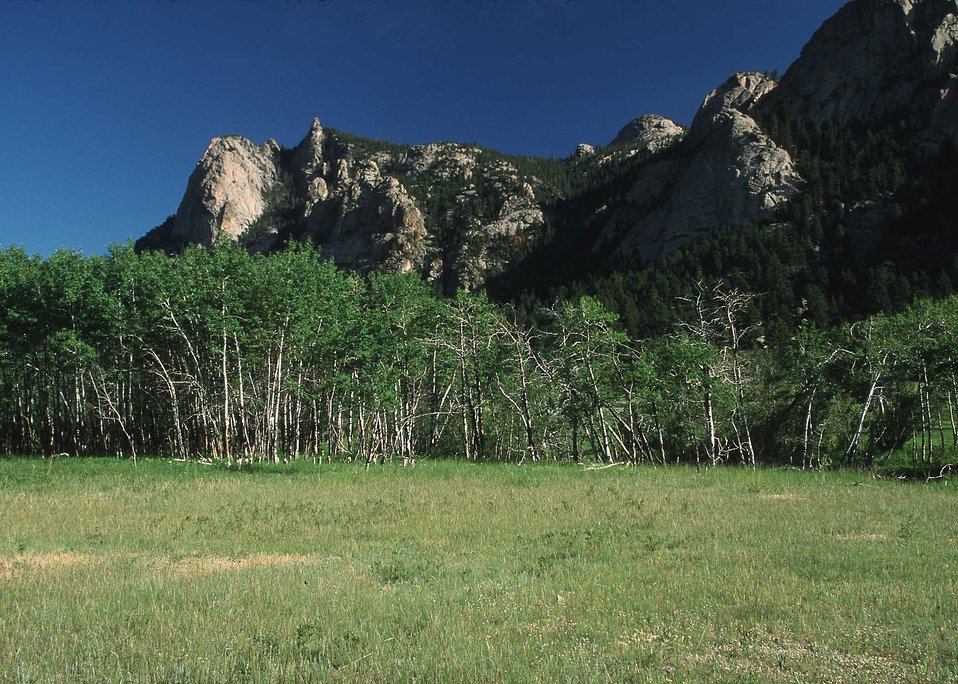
Elk Hedged Aspen, McGregor Ranch, RMNP.